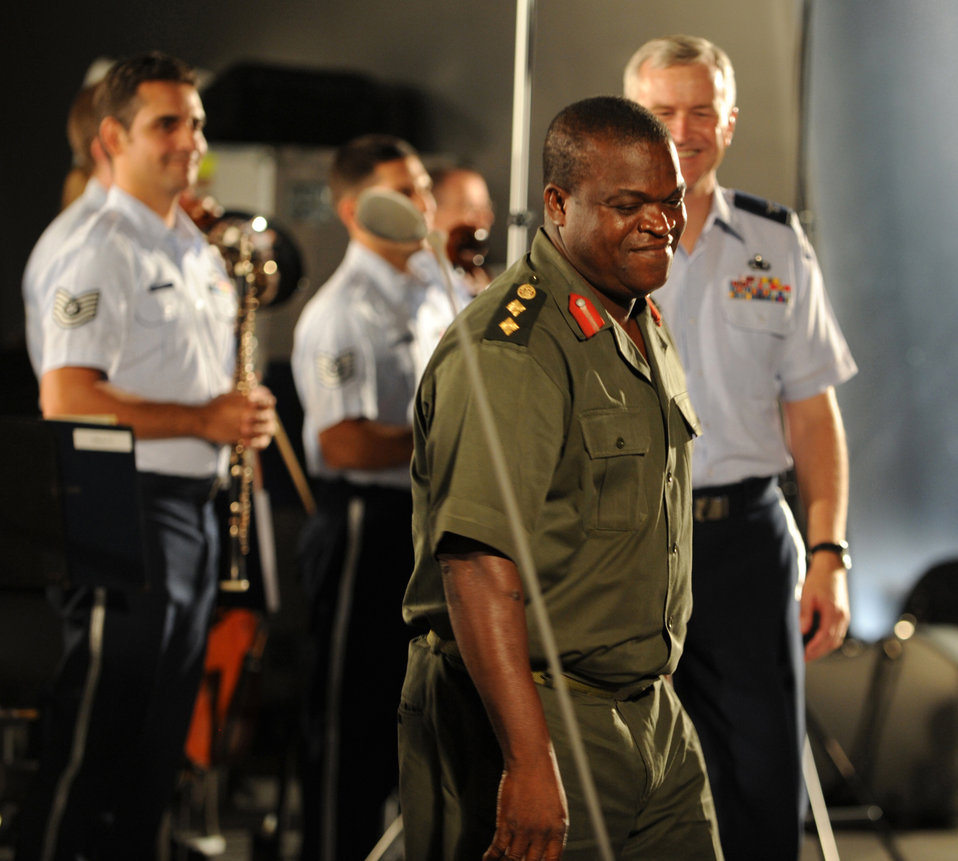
Air Force Band

Col. Sampson Paa-Kwesi Ebonyi, director of music and bands of Ghana Armed Forces, finished conducting his last song to the U.S. Air Force band as they played for bystanders at the Air Force Memorial on August 24, 2012 in Washington D.C. The USAF band hosts this concert every Tuesday from June 5-August 28.